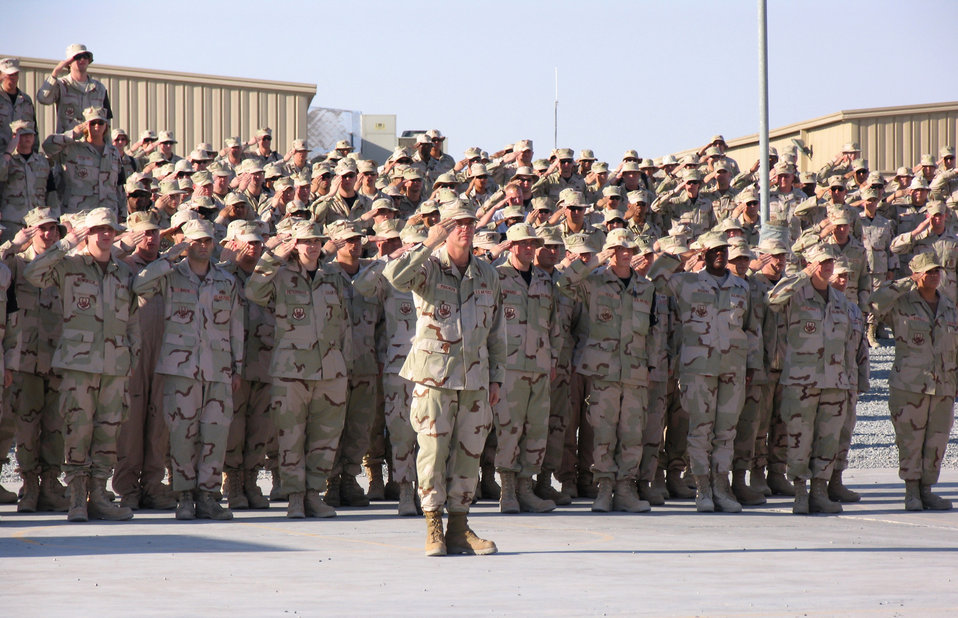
Five years later Airmen remember 9/11, continue the fight

Col. Gregory Perkinson, 386th Expeditionary Mission Support Group commander, and Airmen of the 386th Air Expeditionary Wing salute during a 9/11 memorial service Sept. 11 in Southwest Asia. Coalition members from the Australia Defense Force, Japan Air Self Defense Force and Republic of Korea Air Forces also attended the event.